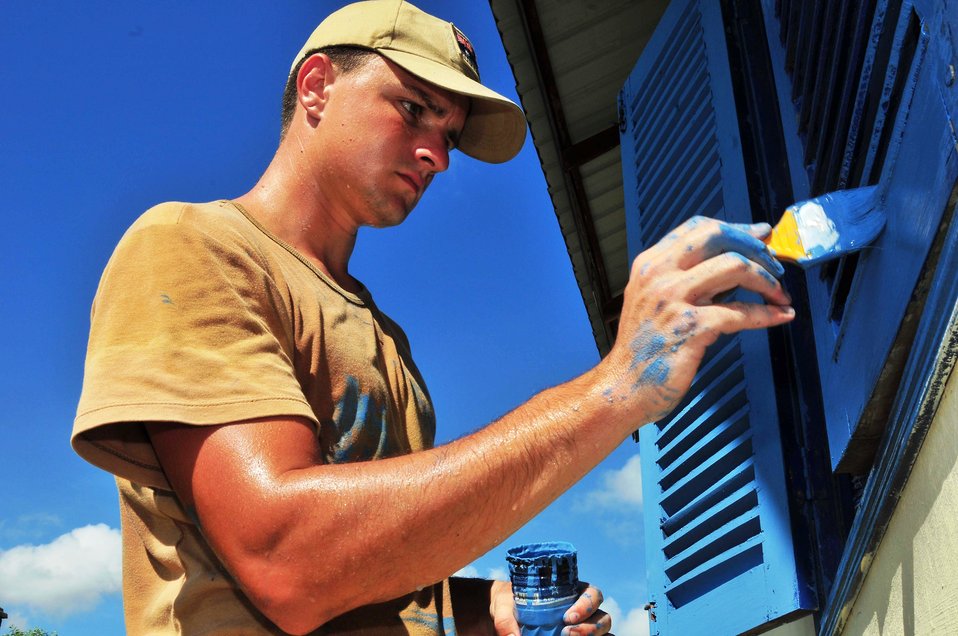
Australian Army Combat Engineer Sapper Tim Kesby paints window shutters at the Andaung Thma School during an engineering civic action program in support of Pacific Partnership 2010 on June 24, 2010, in Sihanoukville, Cambodia. The Military Sealift Command hospital ship USNS Mercy (T-AH 19) is in Cambodia conducting the fifth in a series of annual U.S. Pacific Fleet humanitarian and civic assistance endeavors to strengthen regional partnerships.